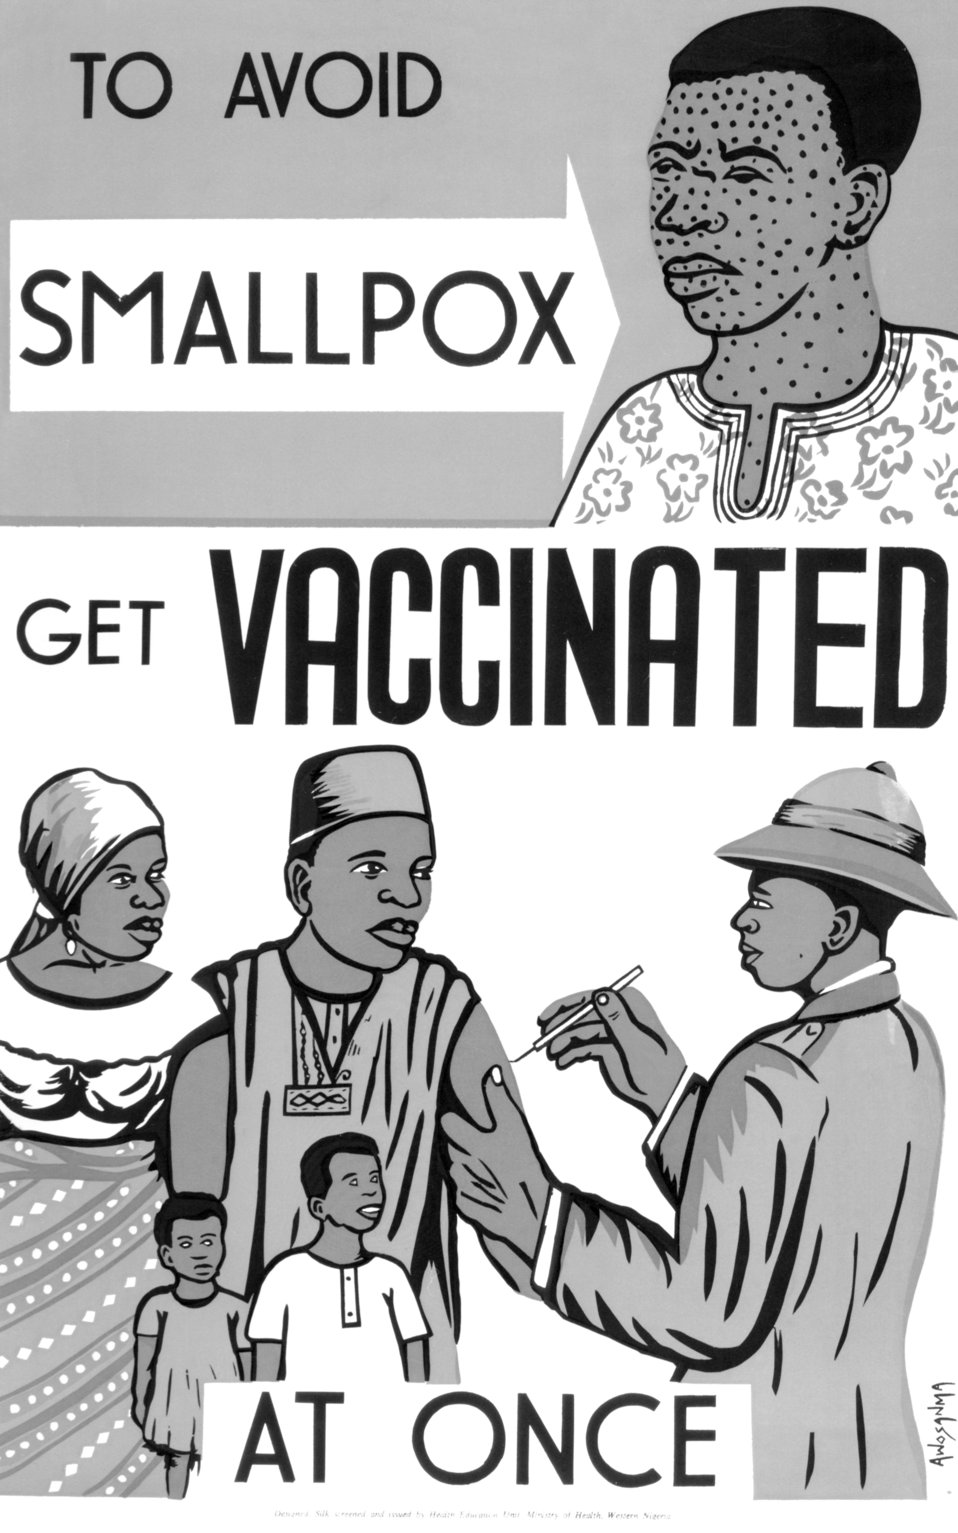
This was an early pre-1979 poster from Western, Nigeria promoting vaccination for Smallpox and Measles.